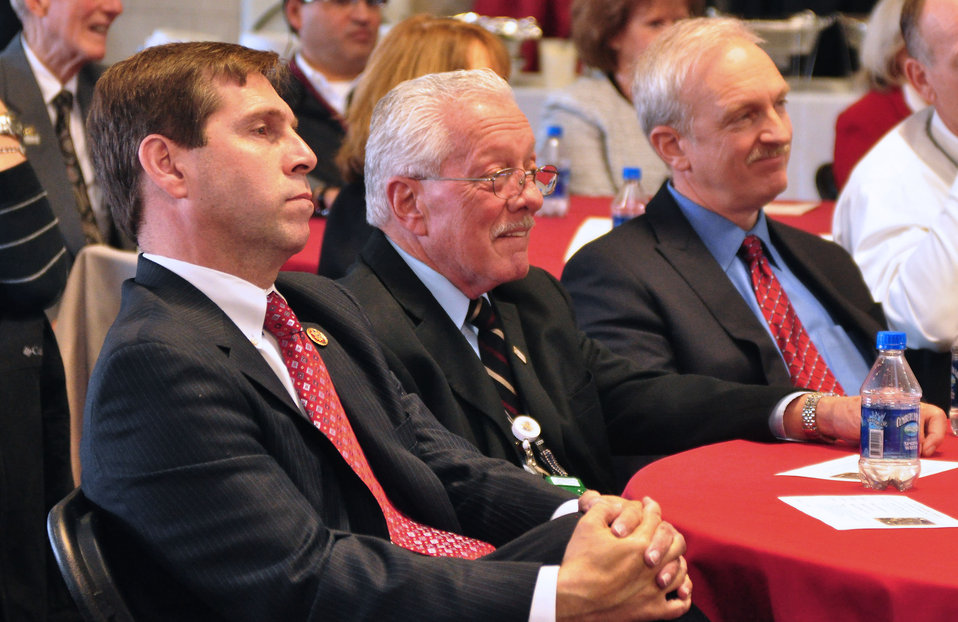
Last Part of K-25 Coming Down Oak Ridge 2013

13-157-1 DOE photo Lynn Freeny 12-19-2013 Oak Ridge Tennessee